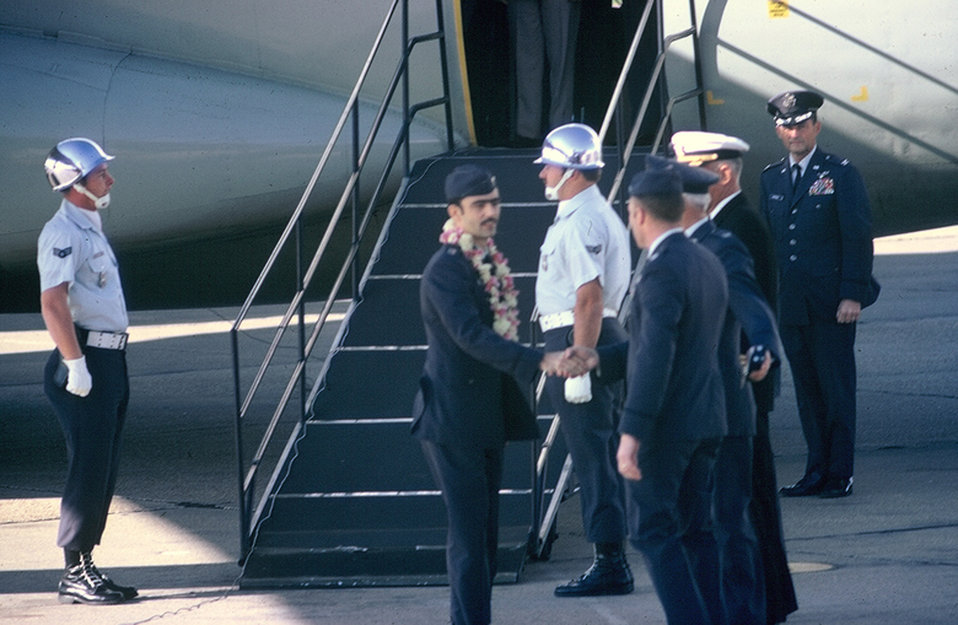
Former POW shares reintegration tips with reservists and their families

Then-Capt. Lee Ellis arrives at Maxwell Air Force Base, Ala., in 1973, after spending more than five years as a prisoner of war in Vietnam. Ellis shared his tips for reintegration with Air Force reservists and their family members at a Yellow Ribbon event in San Diego on Feb. 25, 2012.